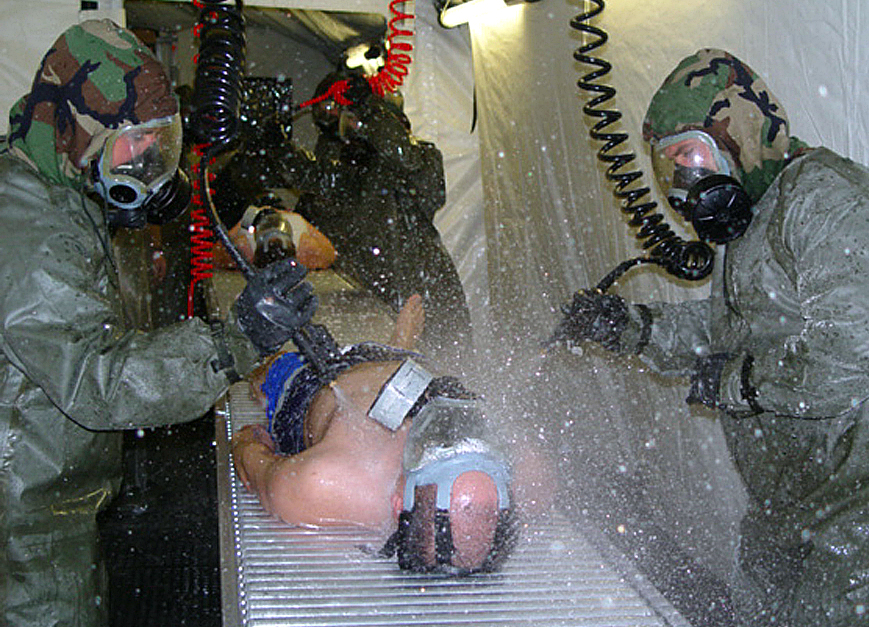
Airmen test medical decontamination shelter

OSAN AIR BASE, South Korea -- Airman 1st Class Steven Randolph (left) and Senior Airman Roger Richards decontaminate a patient processing through the small shelter patient decontamination system. Both airmen are assigned to the 51st Medical Group.